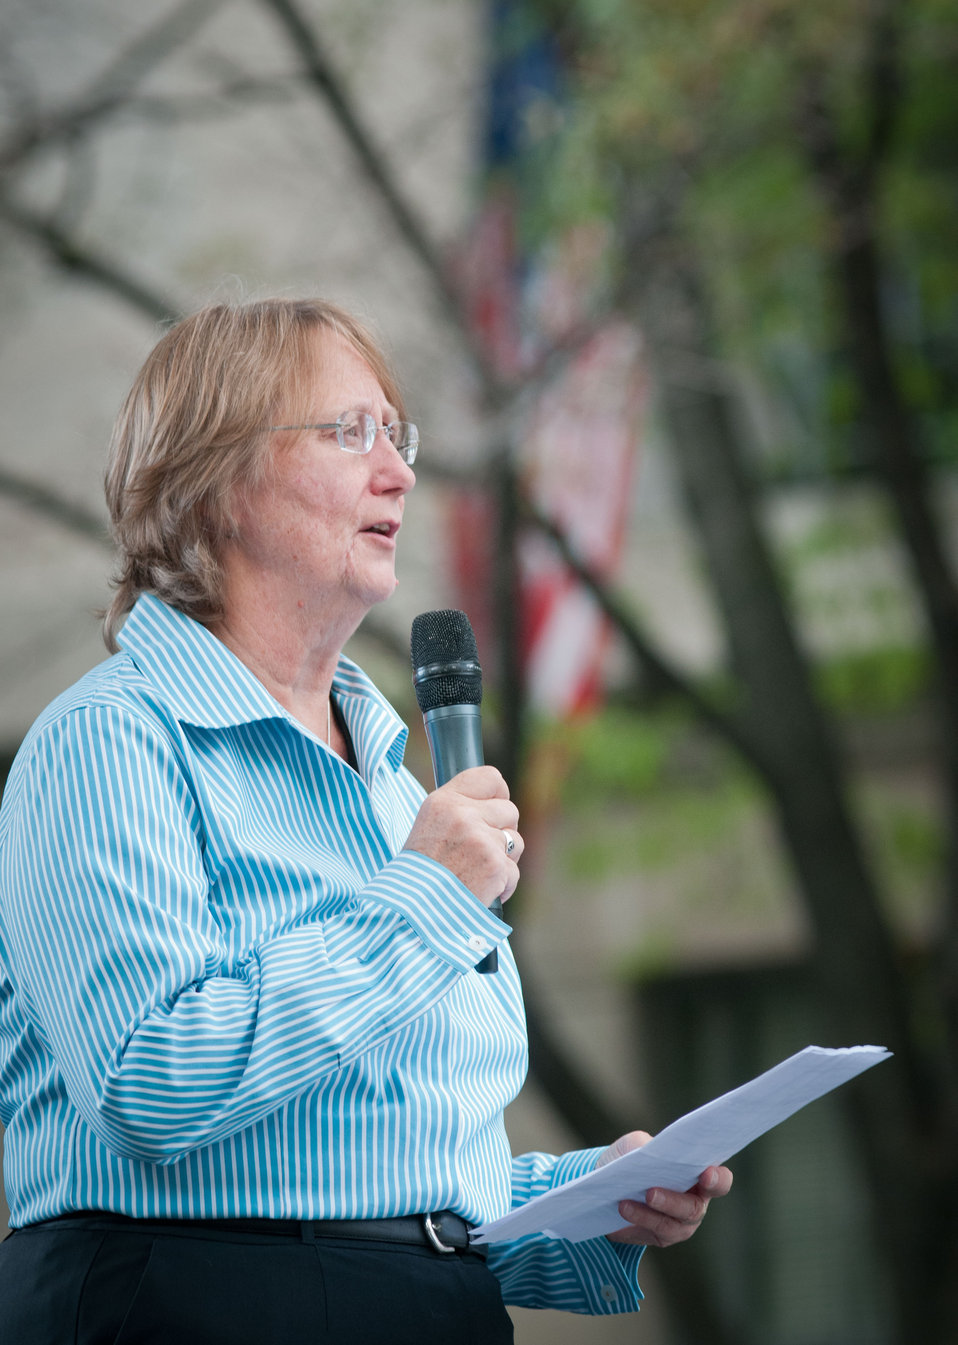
Agriculture Deputy Chief of Staff Carole Jett opens the Taste of D.C., event that highlights more than 70 eateries, 30 specialty beer providers, the United Service Organization (USO) Metropolitan Washington, and live bands. It is anticipated that more than 500,000 people will attend over the course of the three-day event, which extends from the White House to the Capitol, along Pennsylvania Ave. in Washington D.C. on Saturday, October 6, 2012.